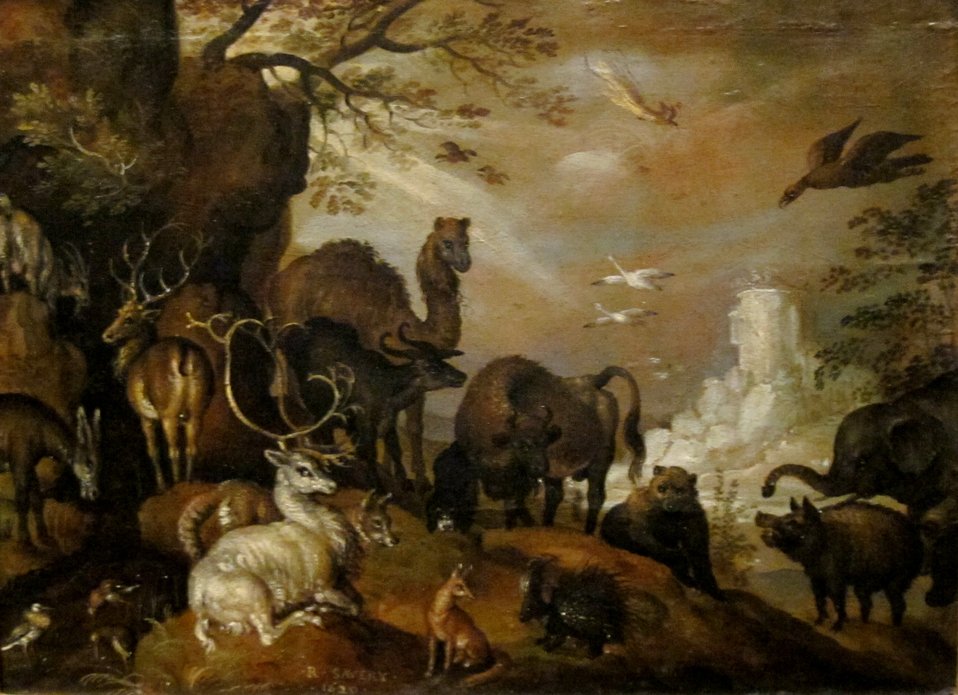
Landscape with Beasts, oil painting by Roelant Savery, 1620, Dayton Art Institute